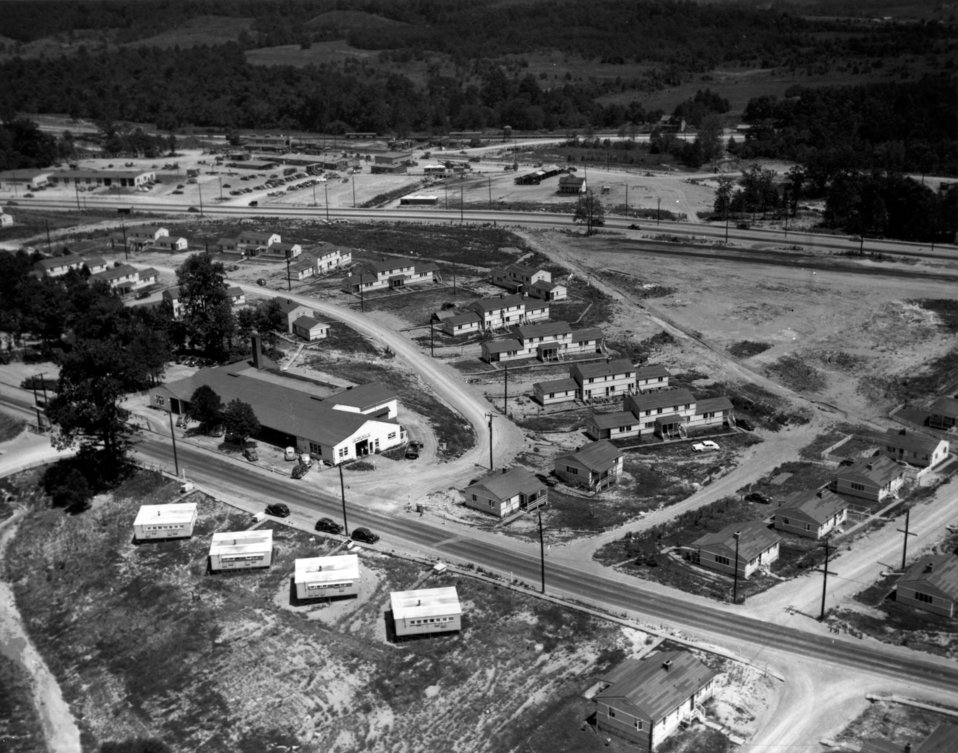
Aerial of Oak Ridge